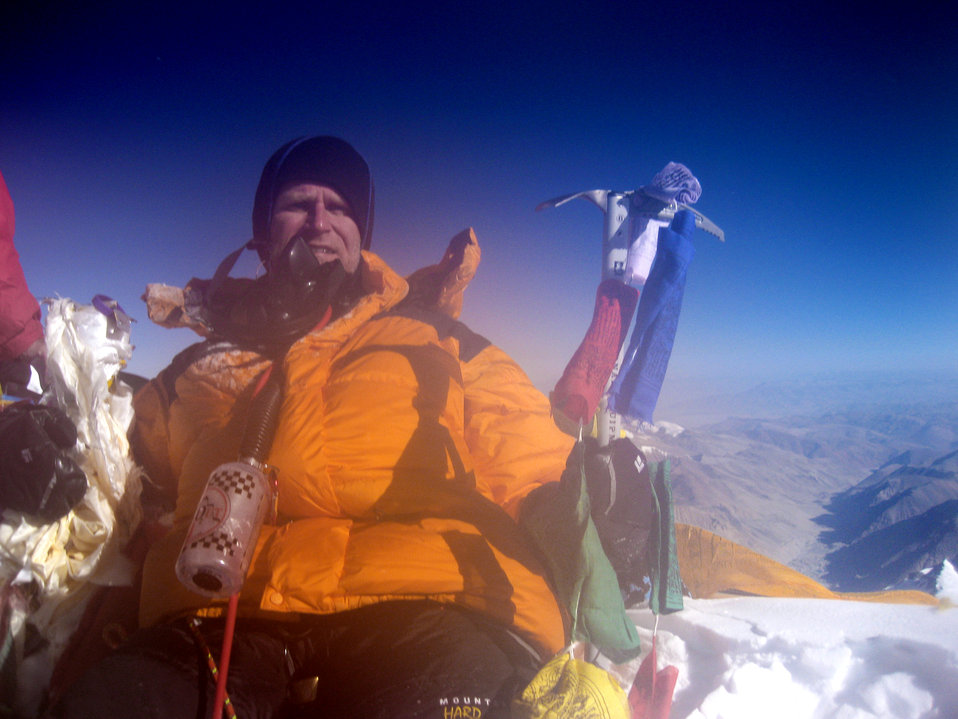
Airman scales Mount Everest

Lt. Col. Peter Solie takes in the view from the summit of Mount Everest May 17, 2010, in Nepal. Colonel Solie is the Air Force Space Command Space Safety Division chief.